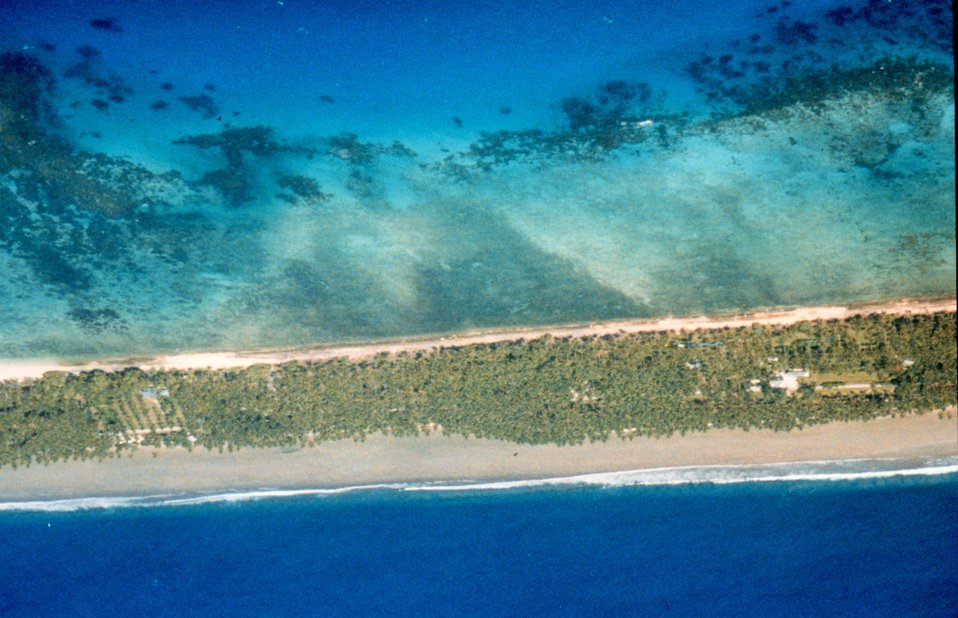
Classic atoll with barrier reef on the outside and lagoon on the inside.